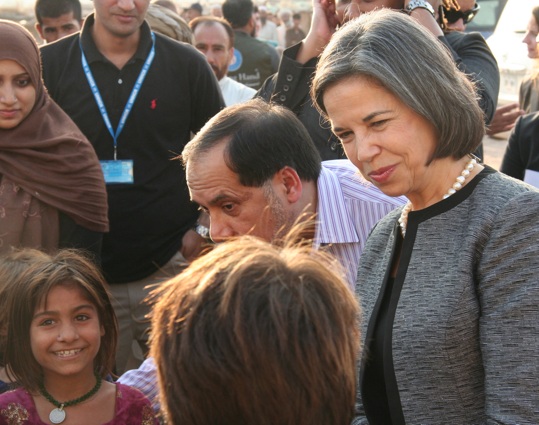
Under Secretary Otero Visits a Refugee Camp

Under Secretary of State for Democracy and Global Affairs Maria Otero visits a refugee camp on the outskirts of Islamabad, Pakistan, on November 1, 2011.